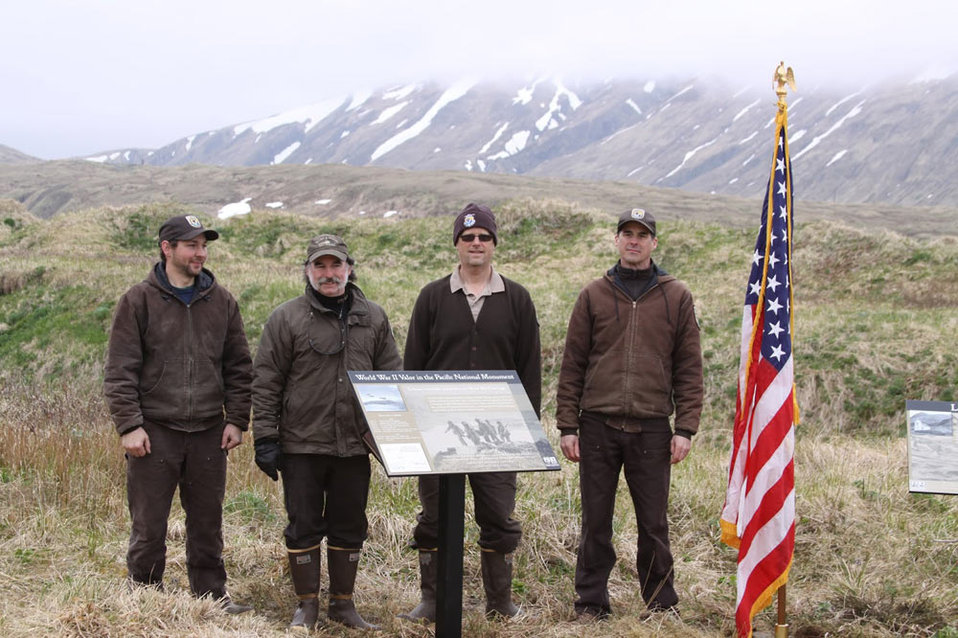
Alaska Maritime-Veterans

Seventy years after young men fought and died on remote, windswept Attu Island in the Alaska Maritime National Wildlife Refuge, the U.S. Fish & Wildlife Service honored their sacrifices with the dedication of a new interpretive site to tell the story of WWII in the Aleutians. Veterans Andy Velsko (from left), Bill Pepper, Dan Erickson and Jeff Williams of the Alaska Maritime National Wildlife Refuge conducted the dedication ceremony in June, complete with taps played on a harmonica in the absence of a bugler.